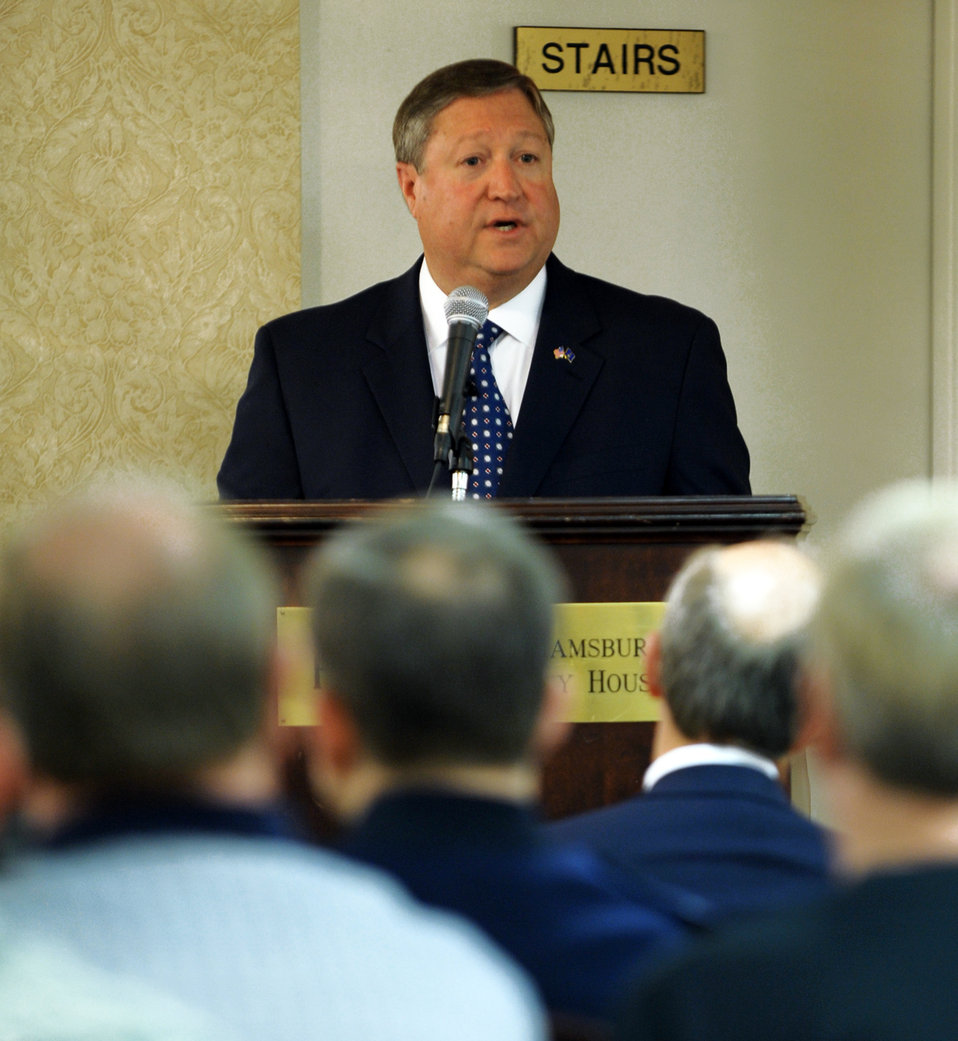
Leadership for the Future

Secretary of the Air Force Michael B. Donley addresses local community members April 23 during a senior leader panel discussion titled